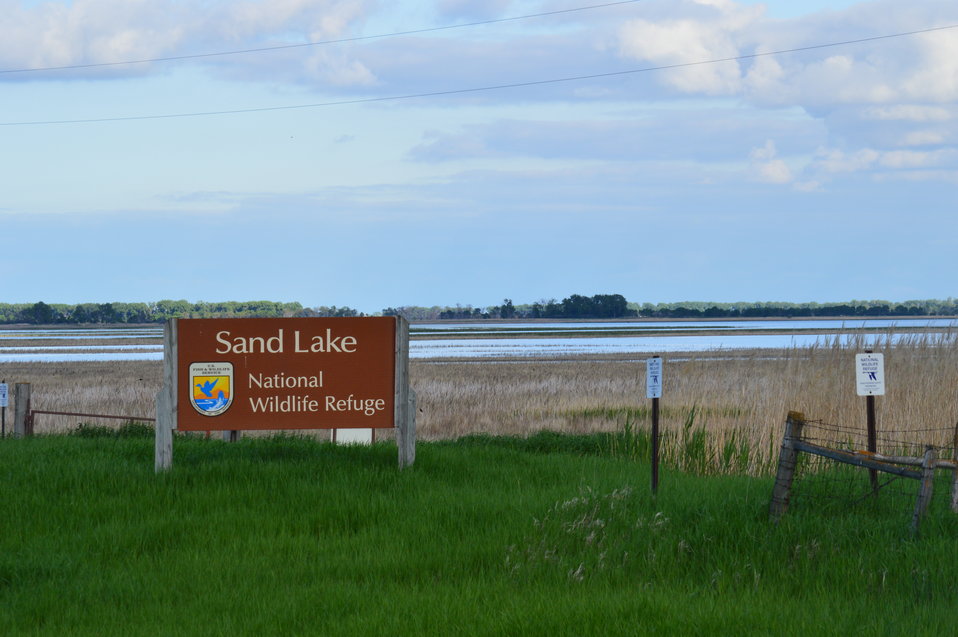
Sand Lake NWR sign and scenery

Scenery and wildlife at Sand Lake National Wildlife Refuge in South Dakota